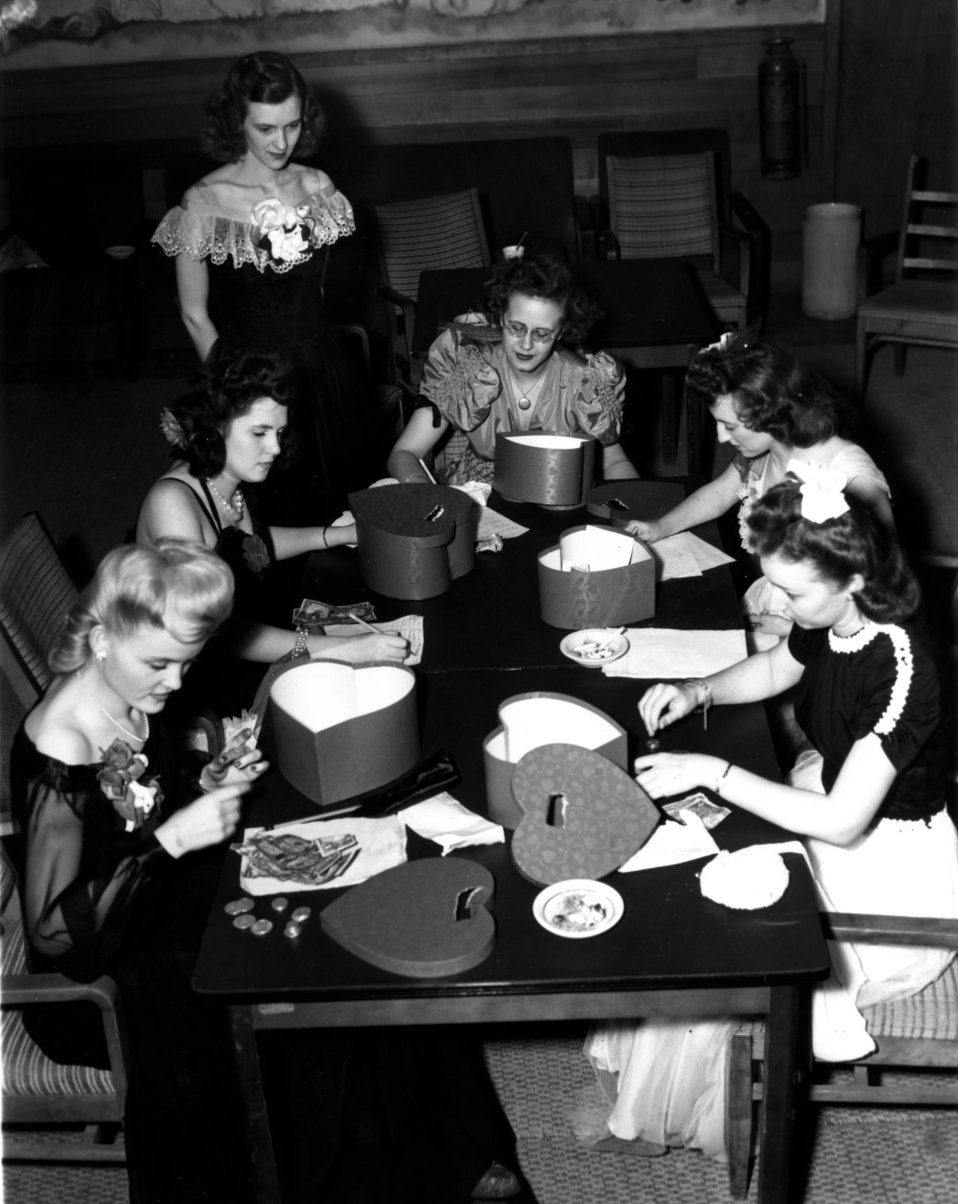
Recreation at Oak Ridge